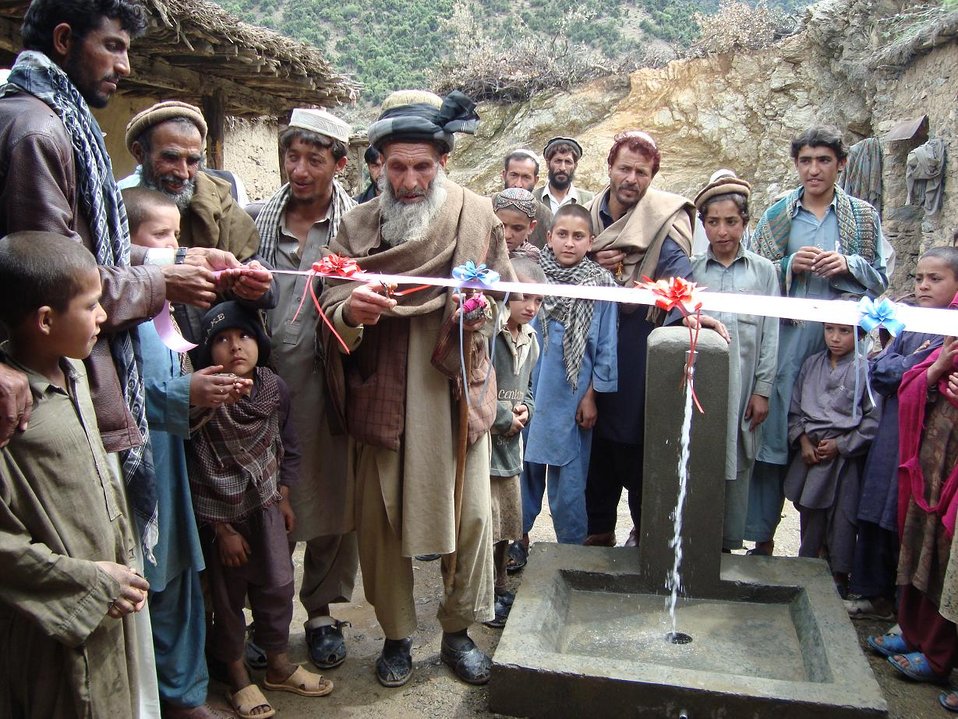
Village Elder at Ribbon Cutting - Nawa Water Taps